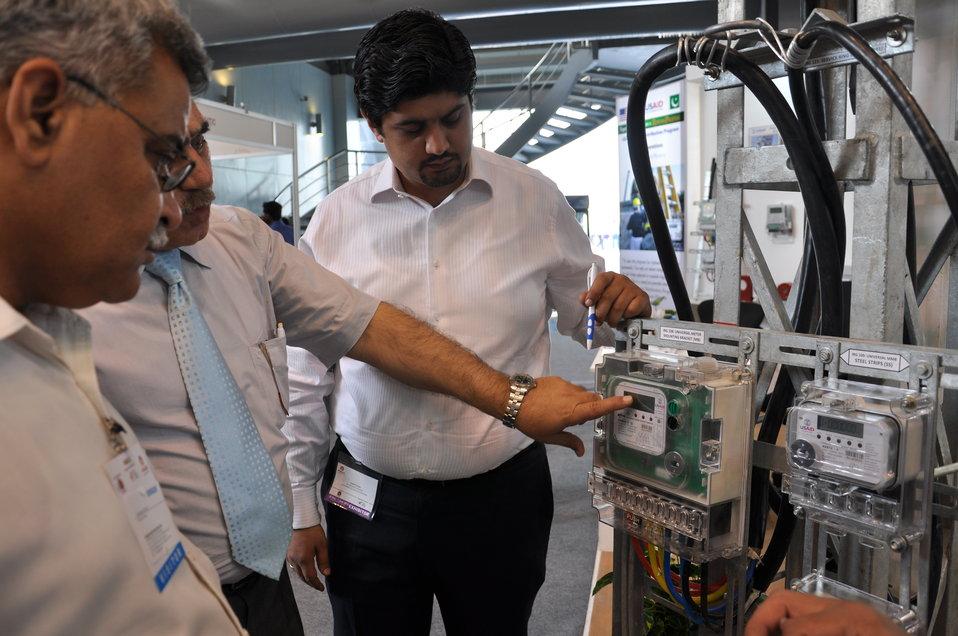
USAID participates in 11th International Pakistan Oil Gas Energy Exhibition

Visitors at the filed operations stall